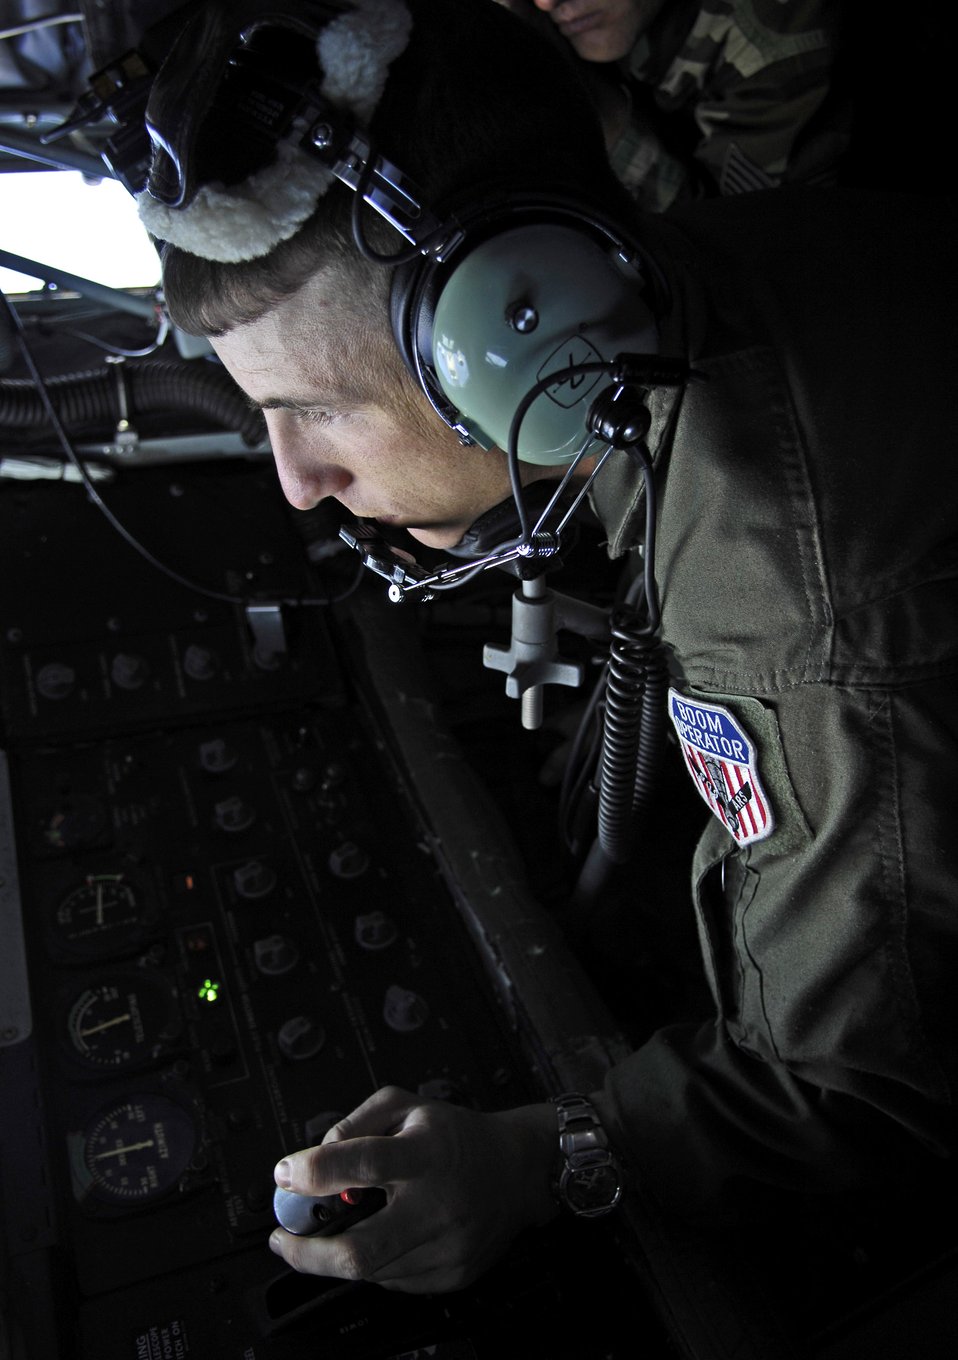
KC-135, C-17 crews rendezvous for refuel readiness

Staff Sgt. David Nixon refuels a C-17 Globemaster III June 18 during aerial refueling practice. A KC-135 Stratotanker from the 909th Air Refueling Squadron at Kadena Air Base, Japan is at Hickam Air Force Base, Hawaii, practicing with a C-17 Globemaster III from the 535th Airlift Squadron for the Air Mobility Command Rodeo. Sergeant Nixon is a boom operator from the 909th ARS.